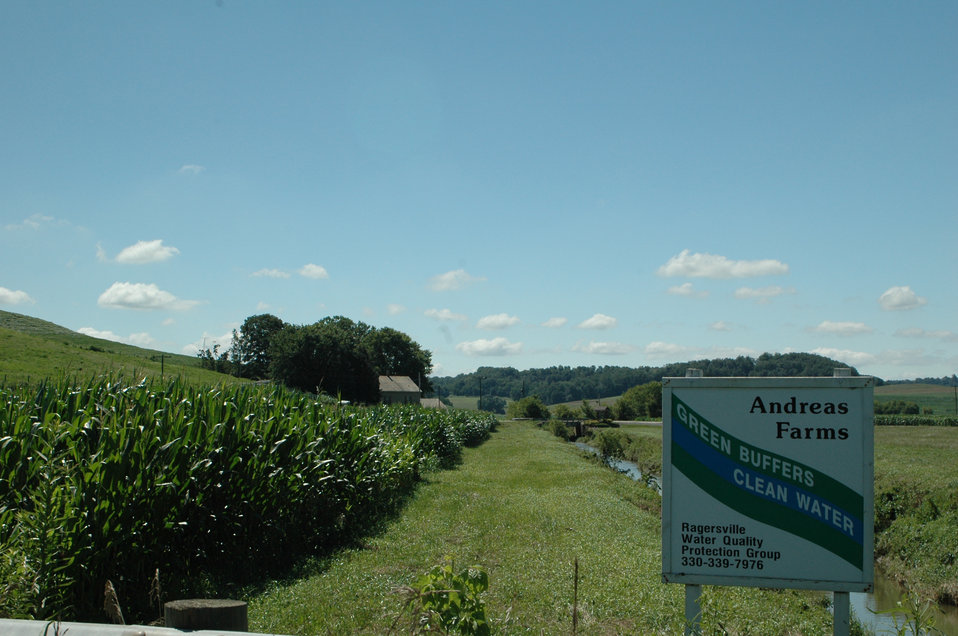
NWQI SUCCESS STORY WITH DAN ANDREAS

Andreas Farm installed a buffer to help improve water quality.